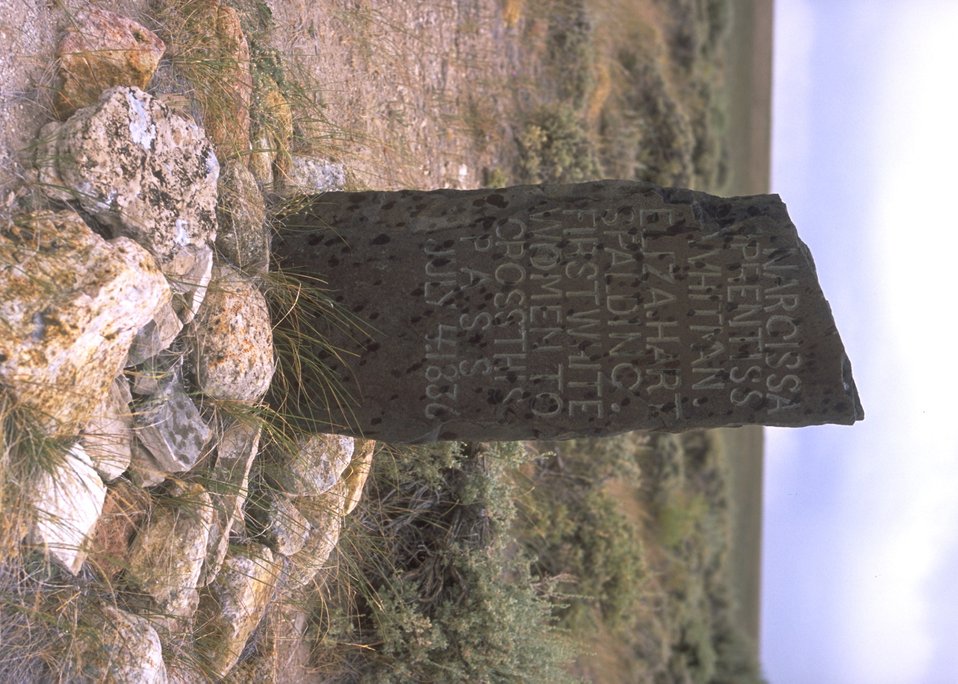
Oregon Trail marker near South Pass identifying the first women to pass through the area, Rock Springs Field Office.